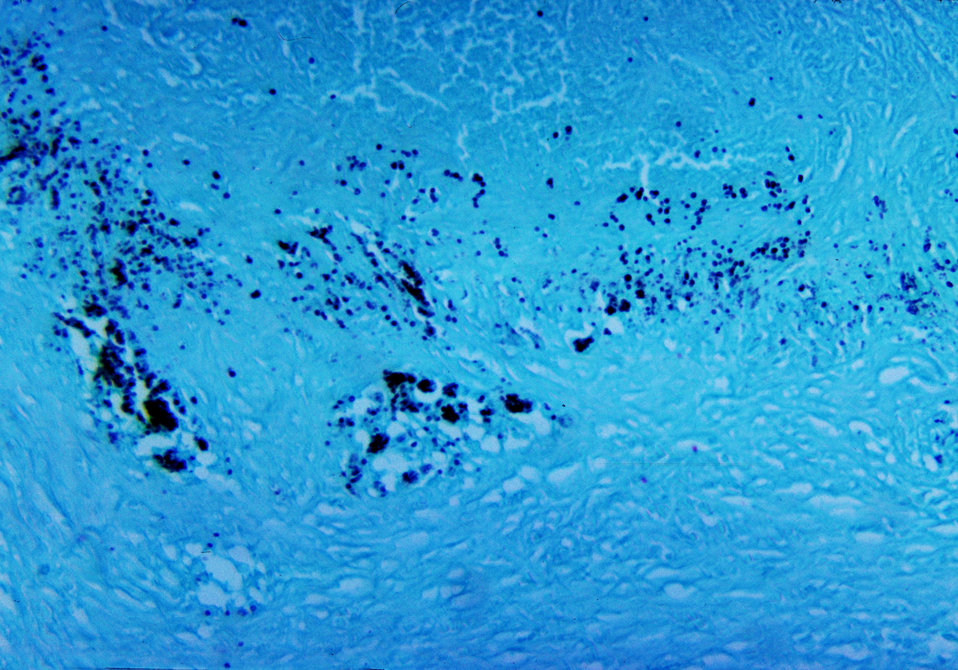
This micrograph depicts the histopathologic changes associated with cryptococcosis of the lung using GMS stain.